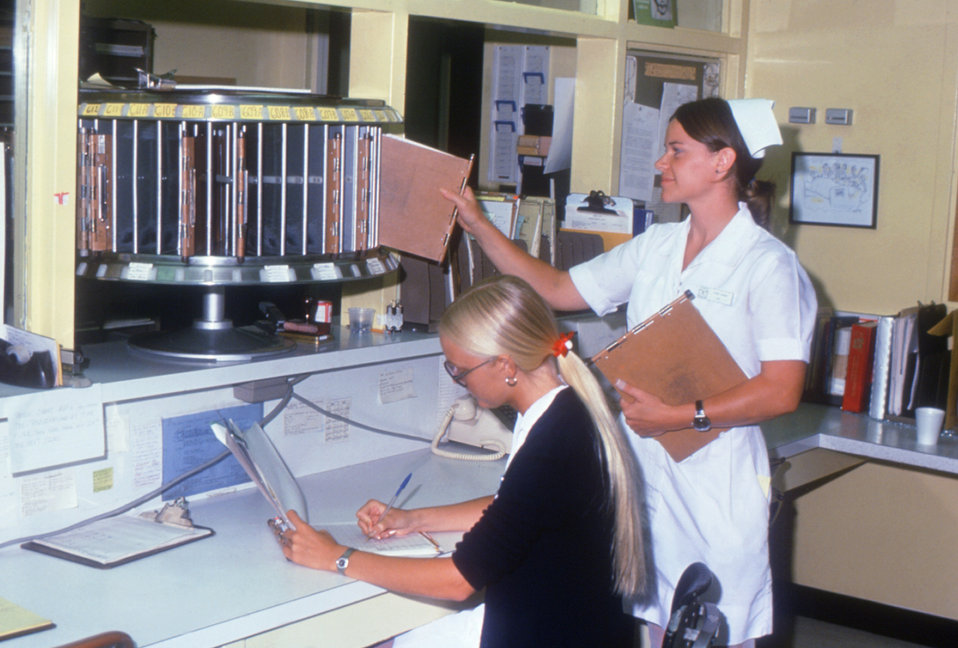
This photograph shows two hospital personnel working with patients' records at a nurse's station.